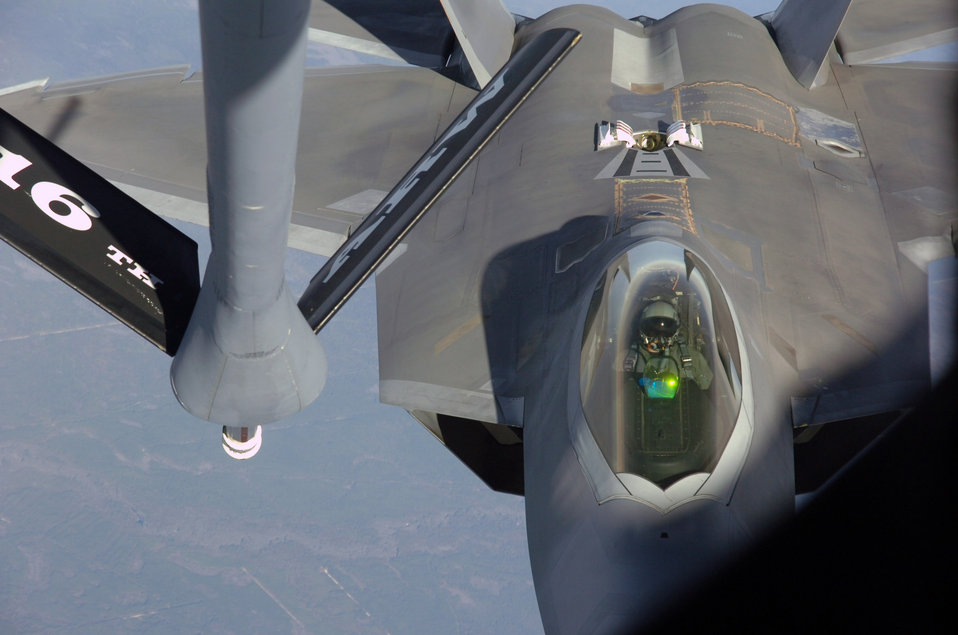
Feeding the Raptor

An F-22 Raptor lines up with a KC-135 Stratotanker during an air-to-air refueling training mission Dec. 4 over Eglin Air Force Base, Fla. The F-22 is from the 43rd Fighter Squadron at Tyndall AFB, Fla. The KC-135 is from the 916th Air Refueling Wing, an Air Force Reserve wing located at Seymour Johnson AFB, N.C.